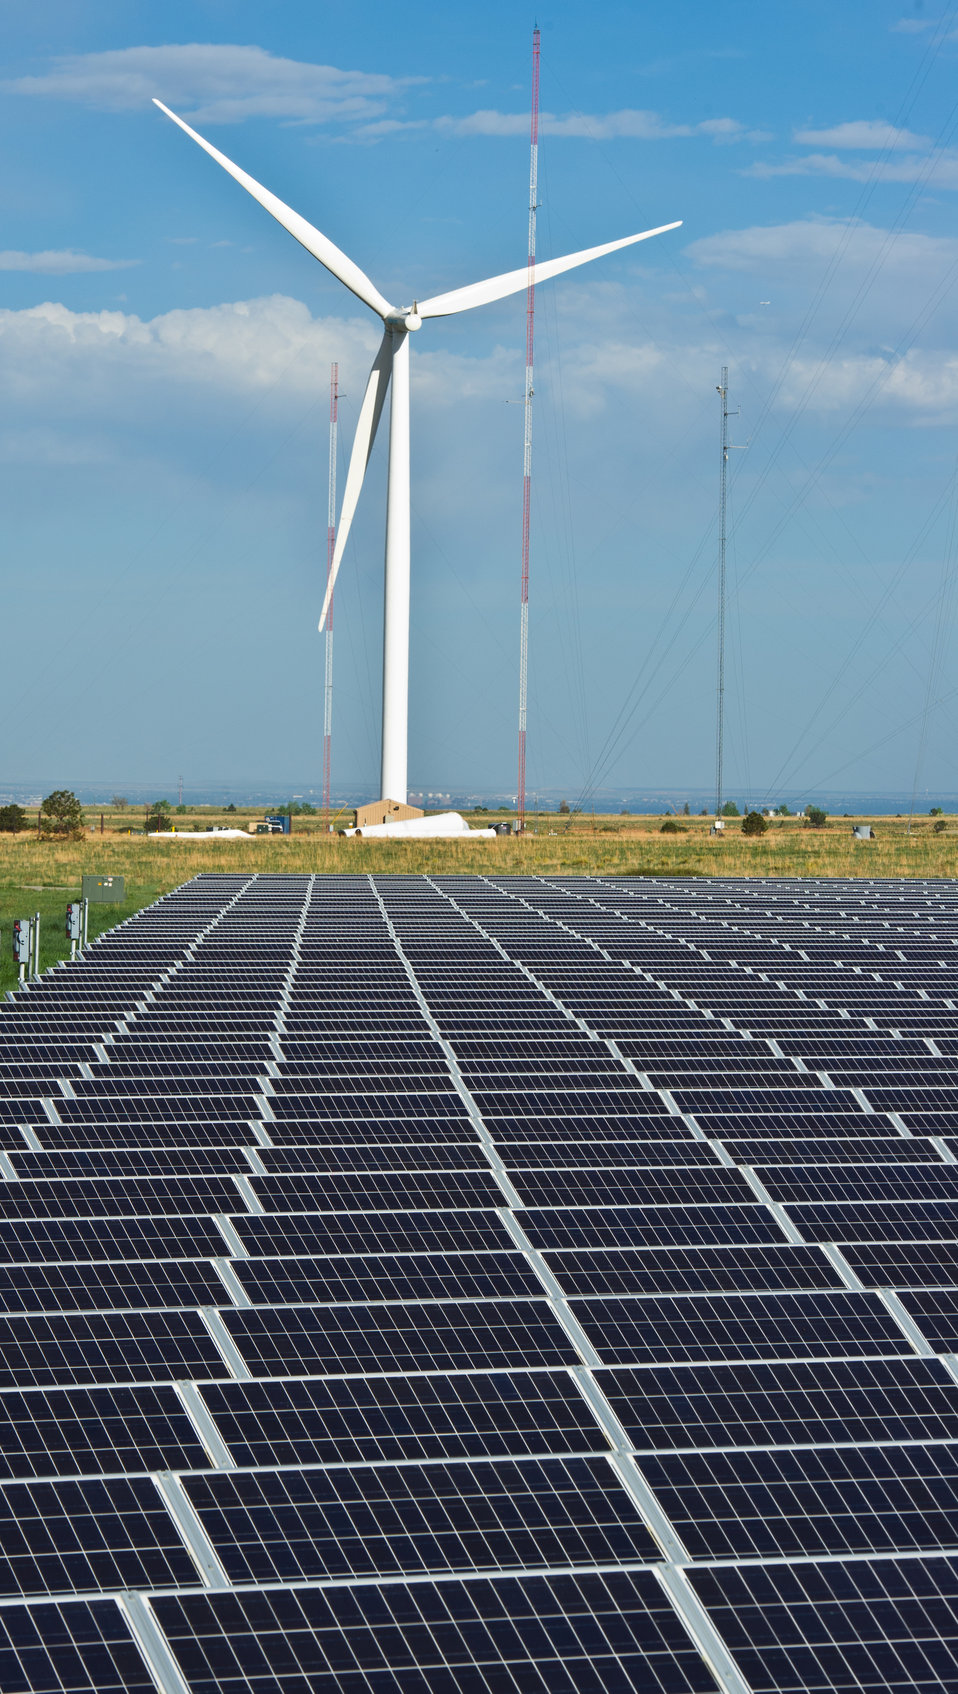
A MULTI-MEGAWATT WIND TURBINE AND ONE MEGAWATT PV FIELD WORK TOGETHER TO PRODUCE ENERGY AT NREL'S NATIONAL WIND TECHNOLOGY CENTER (NWTC).

The turbine can produce energy at night and on cloudy days and the PV field can produce energy during windless days.